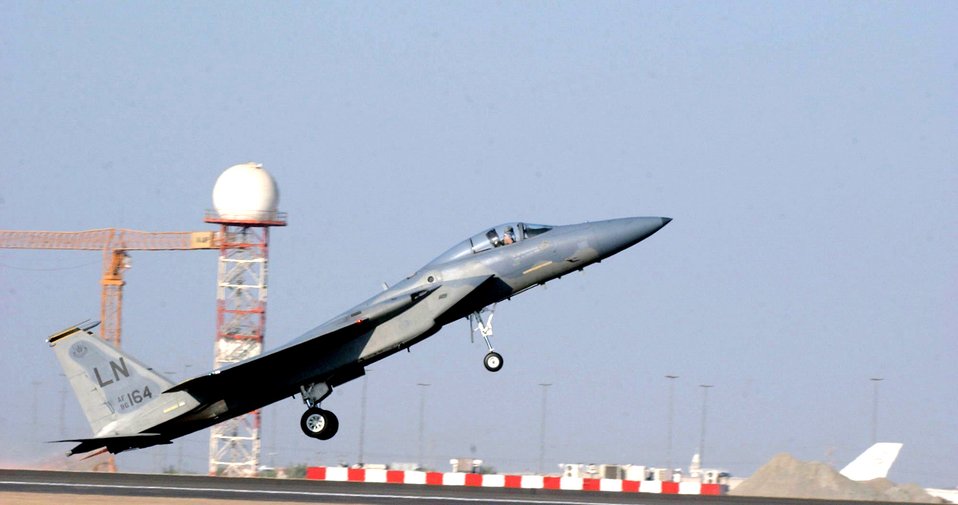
Performing in Dubai

DUBAI, United Arab Emirates (AFPN) -- Capt. Joey Hemphill takes off in his F-15 Strike Eagle for the third largest air show in the world. Captain Hemphill is from Eglin Air Force Base, Fla.